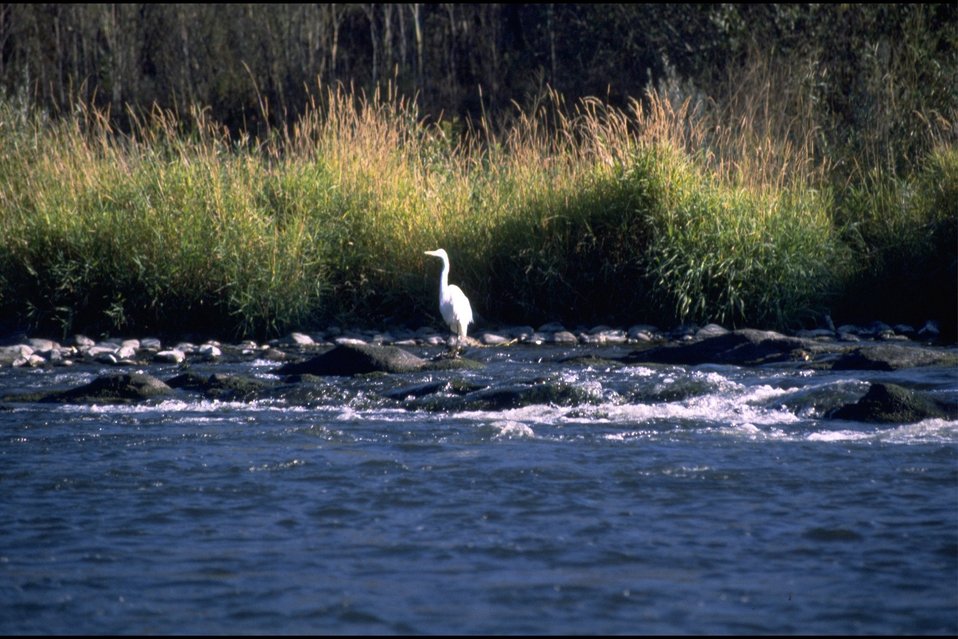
Rogue River - Egret.